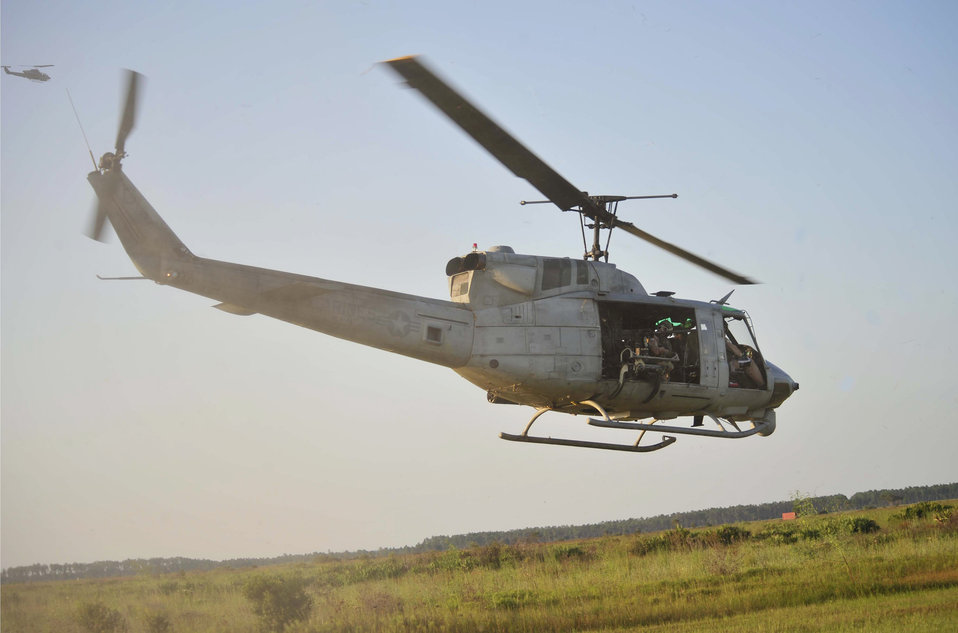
Atlantic Strike

A UH-1 Huey and an AH-1 W Cobra patrol the sky Sept. 14, 2010, as part of Atlantic Strike 10-02 in Avon Park, Fla. The helicopters are from Marine Light Attack Helicopter Squadron-467, Marine Corps Air Station, Cherry Point, N.C. Atlantic Strike is a biannual Air Combat Command-sponsored joint training exercise designed for the tactical employment of air power in support of joint terminal attack controller and joint fires observer integration through close-air support.